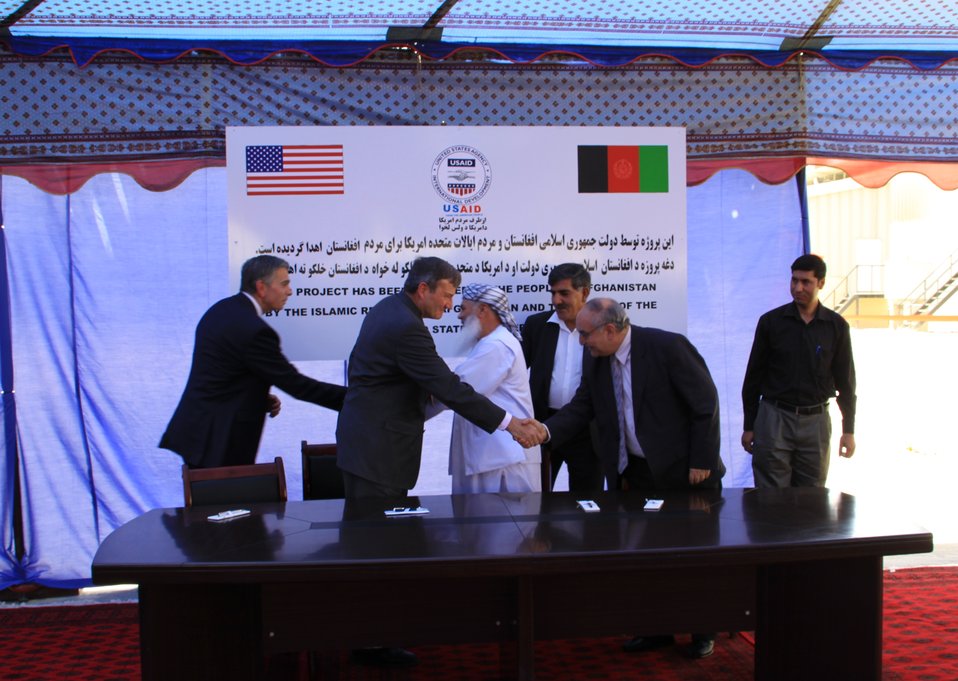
105 MW Tarakhil Power Plant Handover